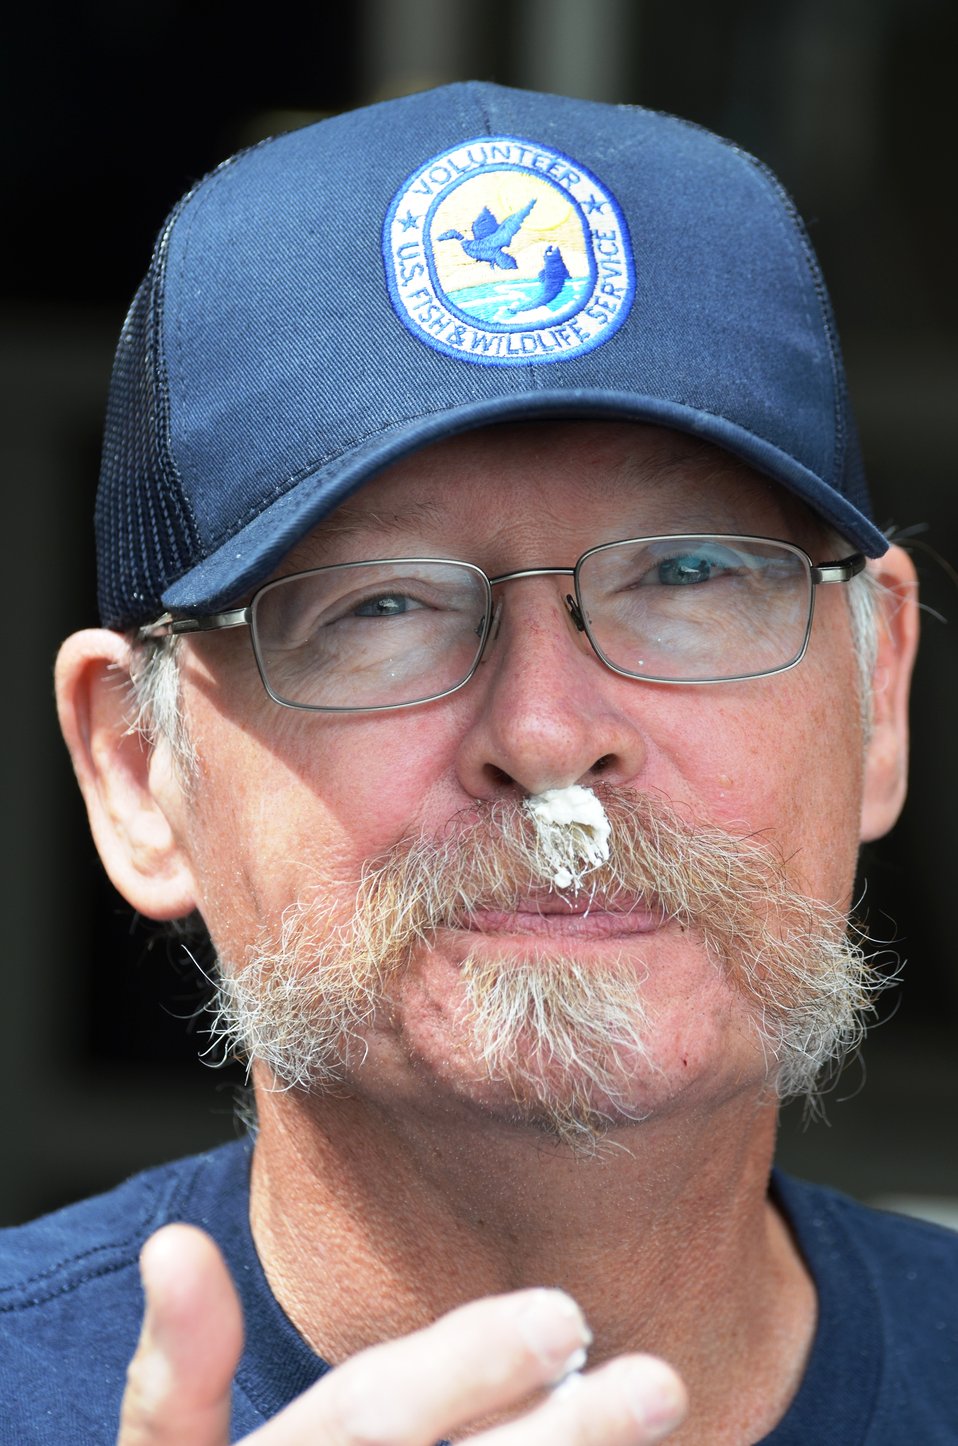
Out of Practice

National Elk Refuge volunteer Ed Houk realized it's not as easy to eat a cupcake as it was as a child!

Credit: USFWS / Bobby Harkey, National Elk Refuge volunteer